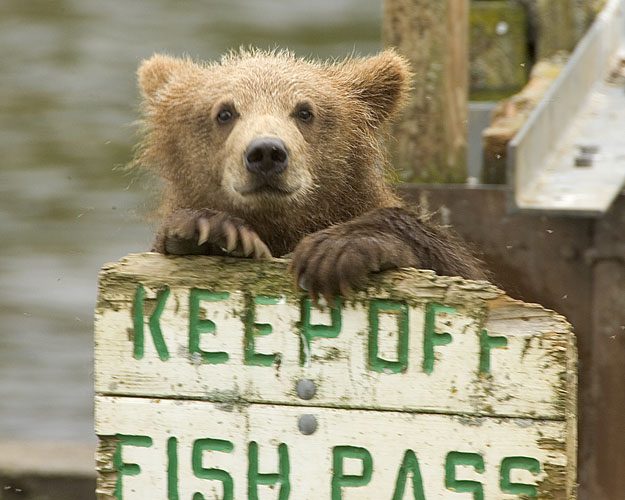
Bearsof Kodiak Refuge

Fish Pass Kodiak bear cub admiting work